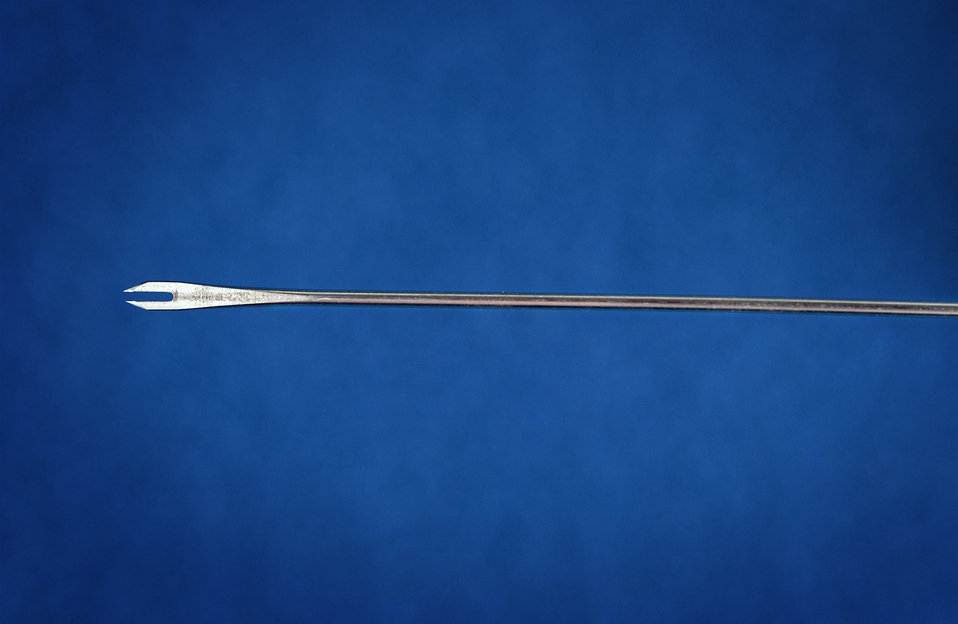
The tip of a bifurcated needle used to vaccinate individuals with the smallpox vaccine.